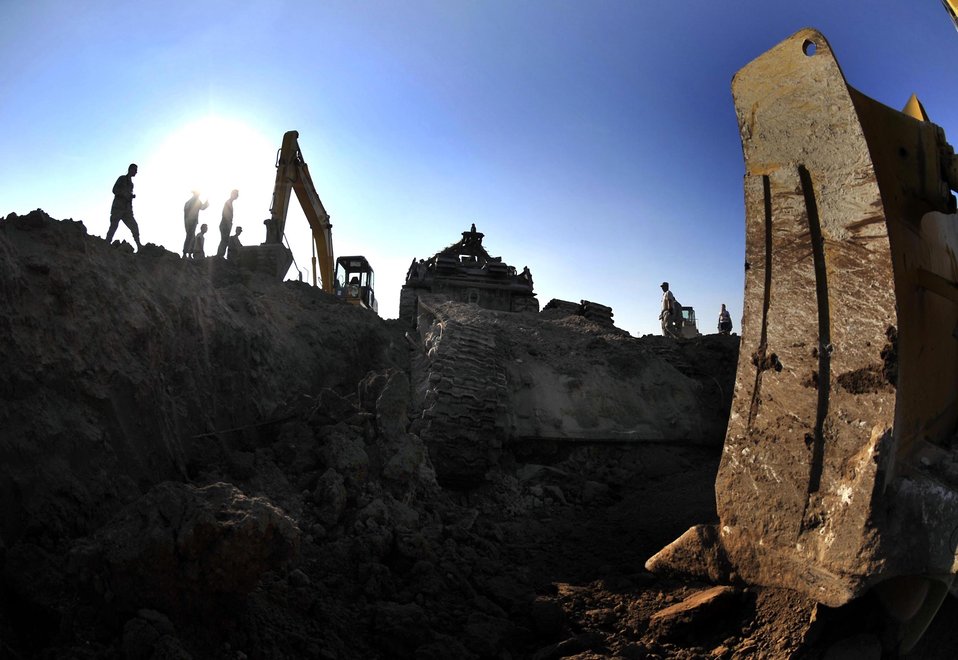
Sather Airmen clear away the debris of war, improve airport safety

Airmen from the 447th Expeditionary Civil Engineer Squadron and Soldiers from the 503rd Maintenance Company work together with an M-88 tank recovery vehicle and a bulldozer pull and push an old Iraqi T-72 Main Battle Tank from its grave on the airfield at Sather Air Base, Iraq. The tank was an obstruction to safe airfield operations and had to be removed.